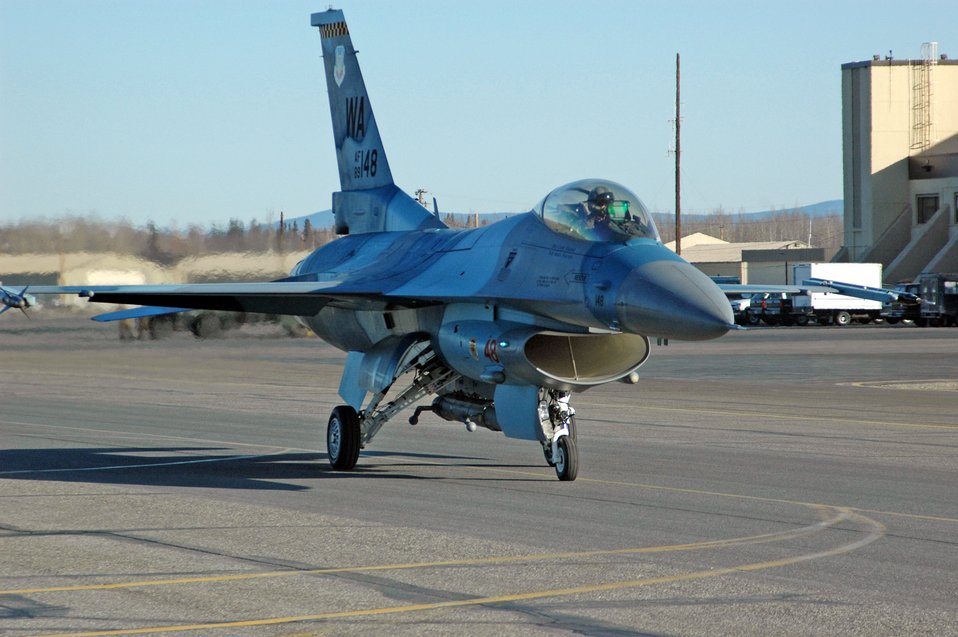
Red Flag-Alaska strengthens coalition forces

An F-16 Fighting Falcon from the 64th Aggressor Squadron at Nellis Air Force Base, Nev., taxis down the runway April 6 at Eielson Air Force Base, Alaska, for a Red Flag-Alaska 07-1 orientation flight. Red Flag-Alaska enables aircrews to sharpen their combat skills by flying 10 simulated combat sorties in a realistic threat environment. Additionally, the training allows them to exchange tactics, techniques, and procedures and improve interoperability. .